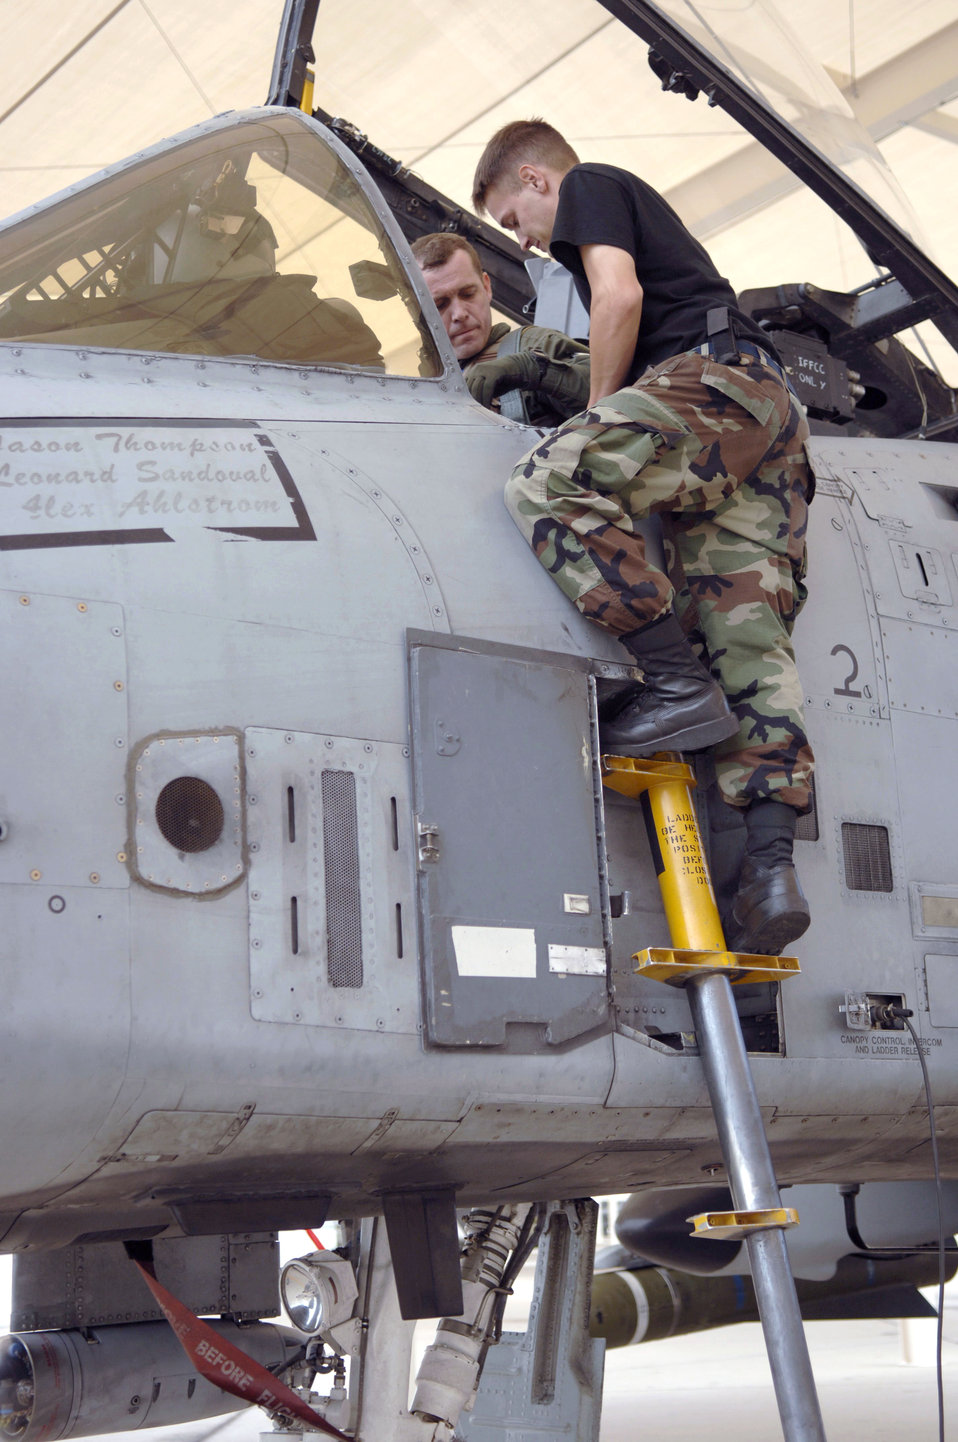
Thunderbolts on duty

Airman 1st Class Brett Davis helps Lt. Col. Francis McDonough as he prepares for a mission in an A-10 Thunderbolt II at Davis-Monthan Air Force Base, Ariz., on July 7. Colonel McDonough is assigned to the 355th Wing and was recently deployed to Bagram Air Base, Afghanistan, in support of Operation Enduring Freedom. Airman Davis is a crew chief with the 354th Aircraft Maintenance Unit.